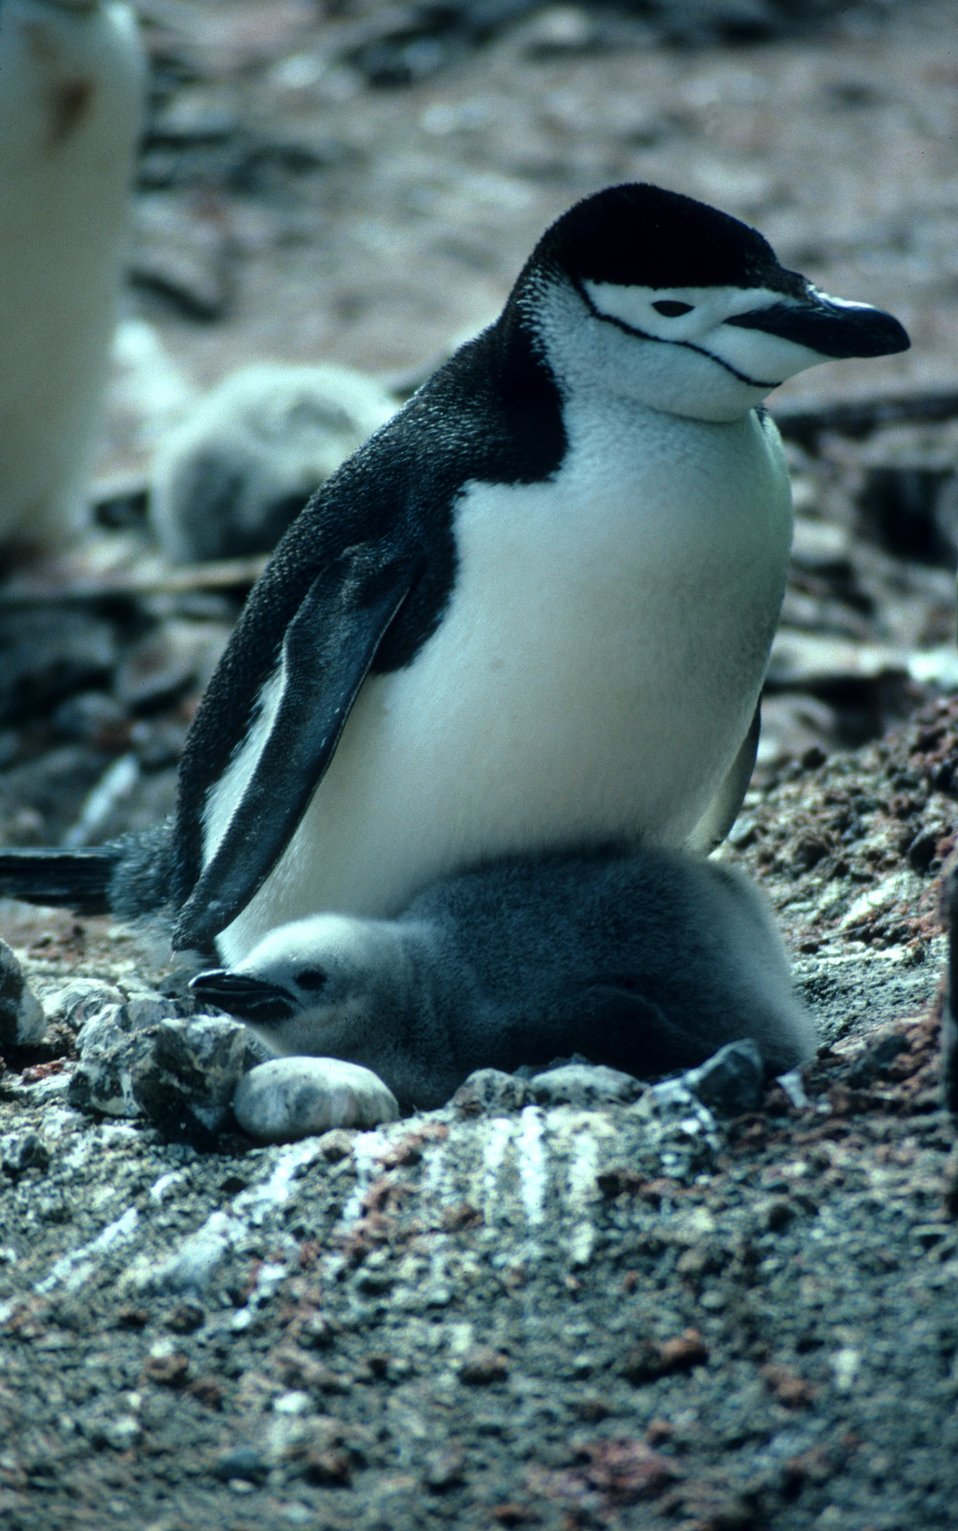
Chinstrap penguin with chick.